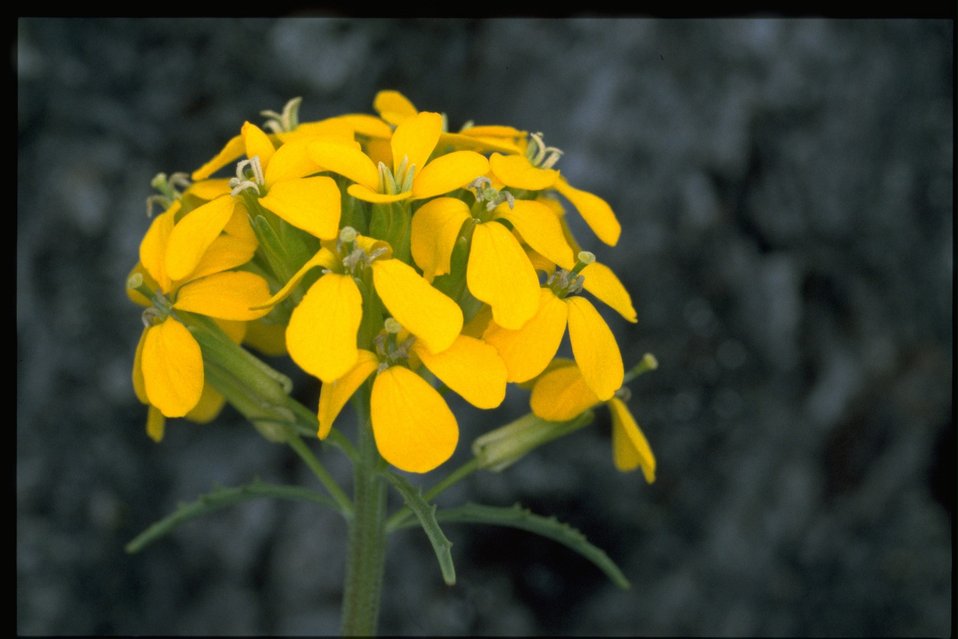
Closeup shot of Erysimum capitatum.